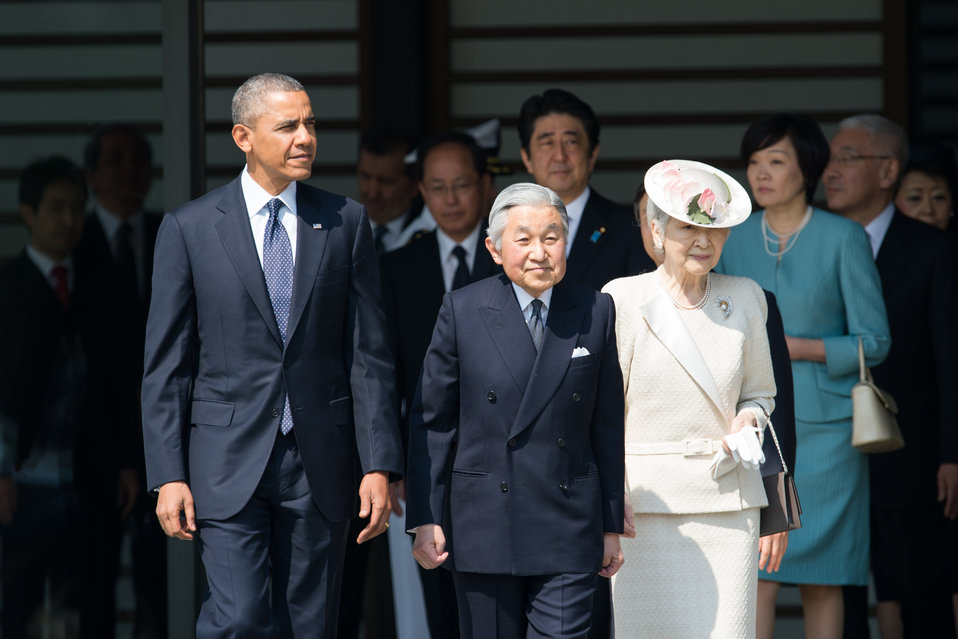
President Obama at the Welcome Ceremony in Japan

U.S. President Barack Obama participates in the welcome ceremony with their Majesties the Emperor and Empress of Japan, and Japan’s Prime Minister Shinzo Abe at the Imperial Palace during his state visit to Tokyo, Japan, on April 24, 2014.